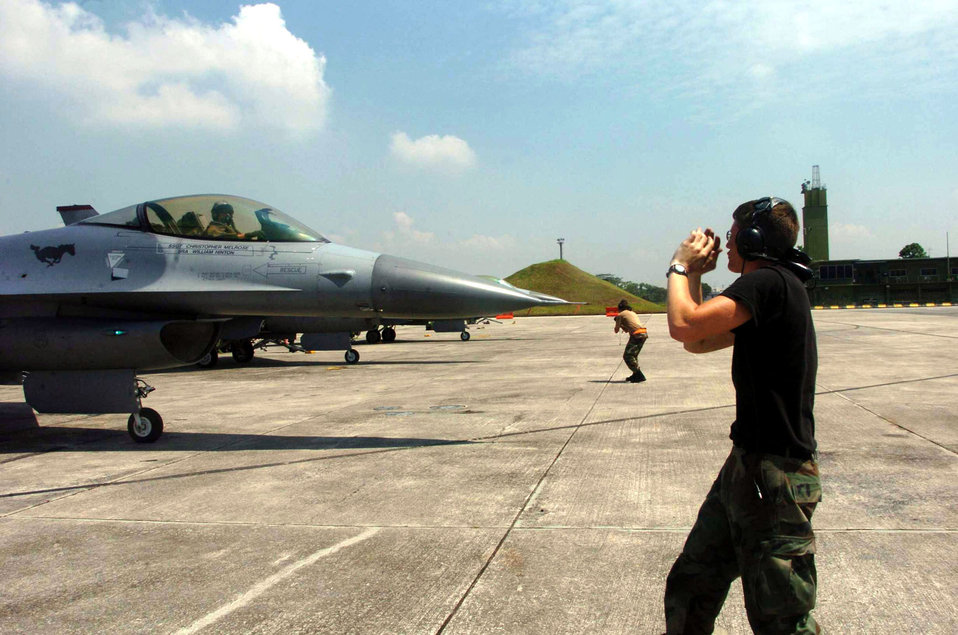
Commando maintainers

PAYA LABAR AIR BASE, Singapore -- Senior Airman Derek Griggs (foreground) and Staff Sgt. Jed Lawhun launch F-16 Fighting Falcons during Commando Sling 04-3 here. U.S. and Singaporean Airmen trained together using realistic dissimilar aircraft air-to-air combat tactics. Both Airmen are crew chiefs with the 36th Maintenance Squadron at Osan Air Base, South Korea.